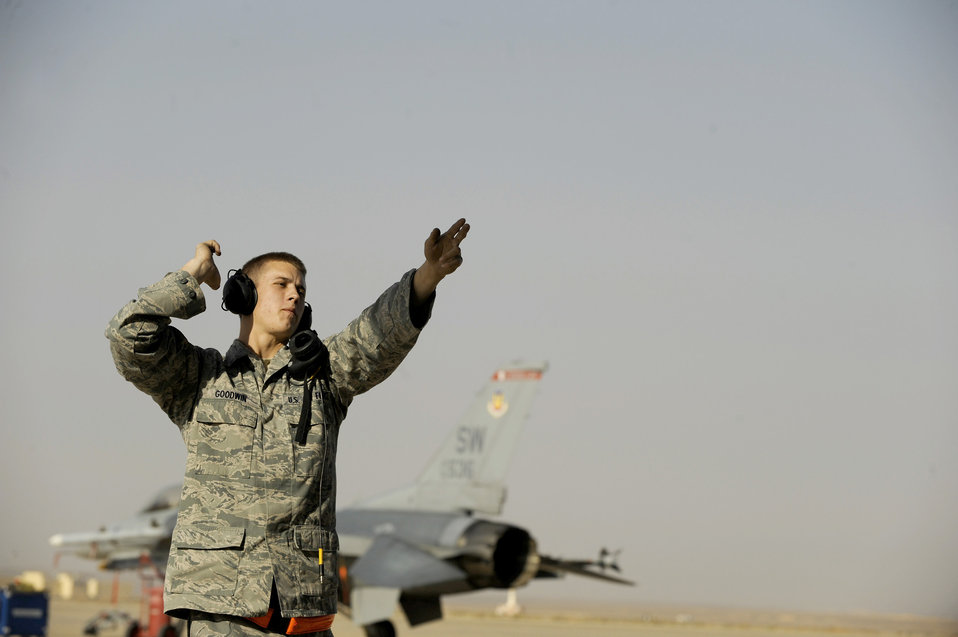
Start your engines!

Airman 1st Class Zach Goodwin marshals his F-16 Fighting Falcon as it prepares for takeoff Oct. 21, 2010, during the Falcon Air Meet 2010 at Azraq Air Base, Jordan. Airman Goodwin is assigned to the 77th Aircraft Maintenance Unit from Shaw Air Force Base, S.C., and is a native of Nashville, Tenn.